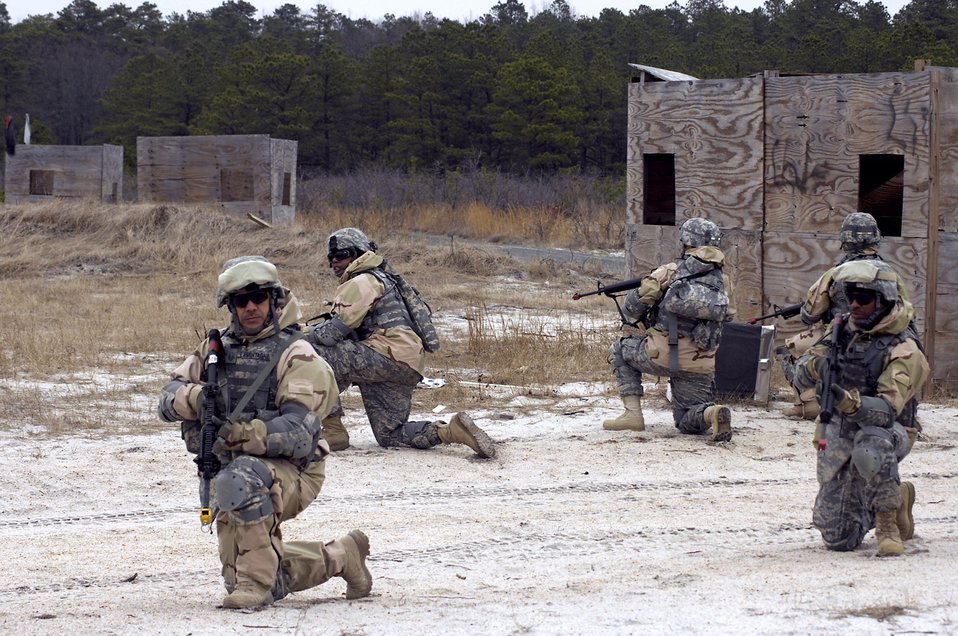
Airmen master Soldier skills training

Airmen guard a mock village during Individual Movement Technique training at the Fort Dix, N.J., improvised explosive device range. The training teaches troops how to conduct maneuvers in an unknown, often hostile, environment. The Airmen, members of USAF Class 25, are completing the Soldier Skills Training Course as they prepare for various deployments around the globe. There are about 75 Airmen currently going through the month-long course.